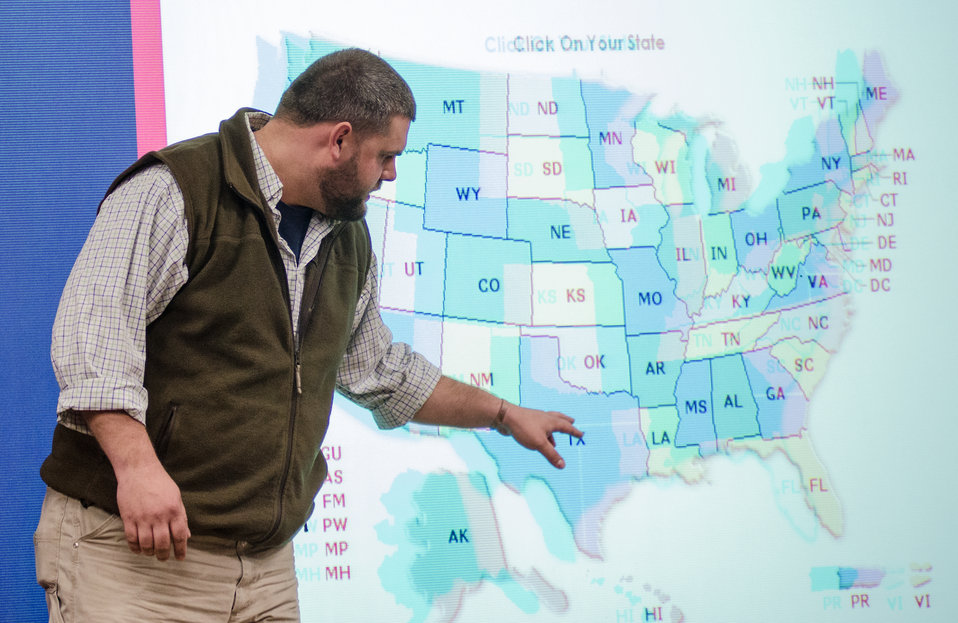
U.S Department of Agriculture (USDA) Natural Resources Conservation Service (NRCS) Amelia County District Conservationist Derek Hancock talked with farmers about NRCS tools and information that may be of interest to them and how to reach NRCS people that support their area, during the “Virginia State University (VSU), USDA and Virginia Farmers Working Together” outreach workshop in the VSU, L. Douglas Wilder building on Thursday, March 7, 2013, in Petersburg, VA. Farmers shared and learned new ways to do more with USDA services, and how to apply for programs that will help grow their business.